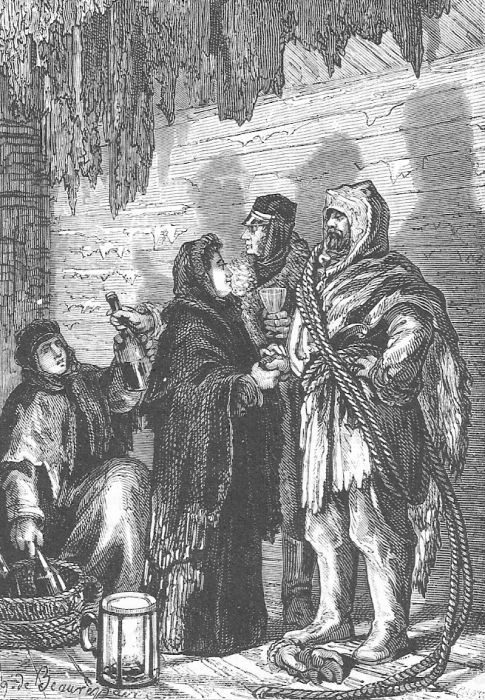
An illustration from Jules Verne's novel 'The Fur Country' (1871-72) drawn by Jules-Descartes Férat or Alfred Quesnay de Beaurepaire. Polski: Ilustracja powieści Juliusza Verne'a 'Wyspa błądząca' (także: 'W krainie białych niedźwiedzi', przekł. dosł.: 'Kraina futer'; 1871-72) autorstwa Julesa-Descartesa Férata lub Alfreda Quesnaya de Beaurepaire'a. Français : Jules Verne: 'Le Pays des fourrures' (1871-72), dessins par Jules-Descartes Férat ou Alfred Quesnay de Beaurepaire. Orginal description from the book: Français : Mrs. Paulina Barnett serra la main du brave Long.